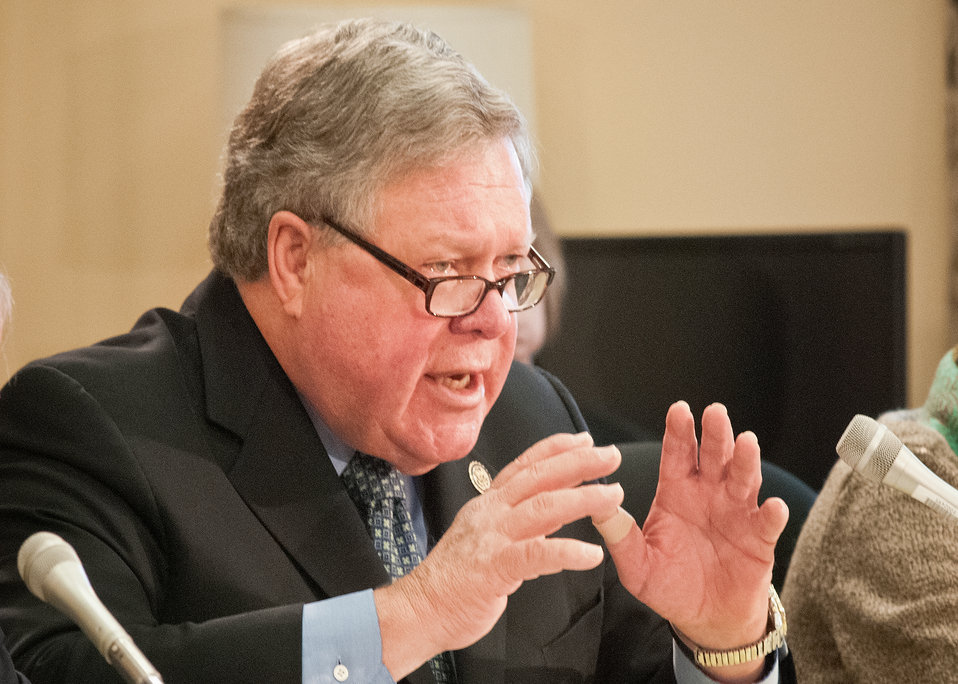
Congressman Norm Dicks, Washington a member of the House Agriculture Appropriations Committee posed questions to Agriculture Secretary Tom Vilsack and members of his cabinet during a House Agriculture Appropriations Committee meeting to discuss the United States Department of Agriculture budget in the Rayburn House Office Building on Friday, February 17, 2012 in Washington, D.C.